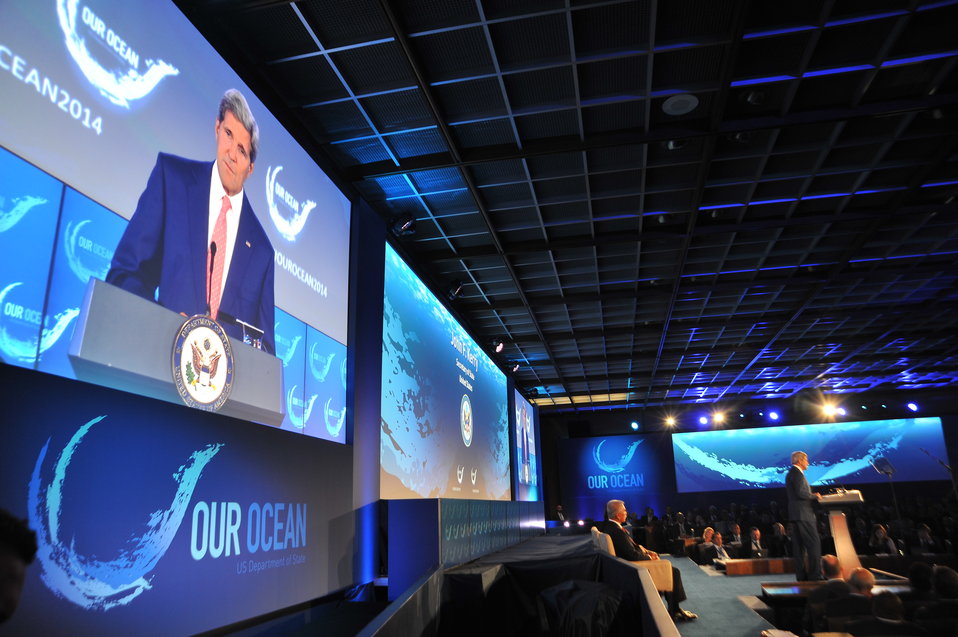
Secretary Kerry Delivers Remarks at the Opening Session of the 'Our Ocean' Conference

U.S. Secretary of State John Kerry delivers remarks at the opening session of the 2014 'Our Ocean' conference at the U.S. Department of State in Washington, D.C. on June 16, 2014.